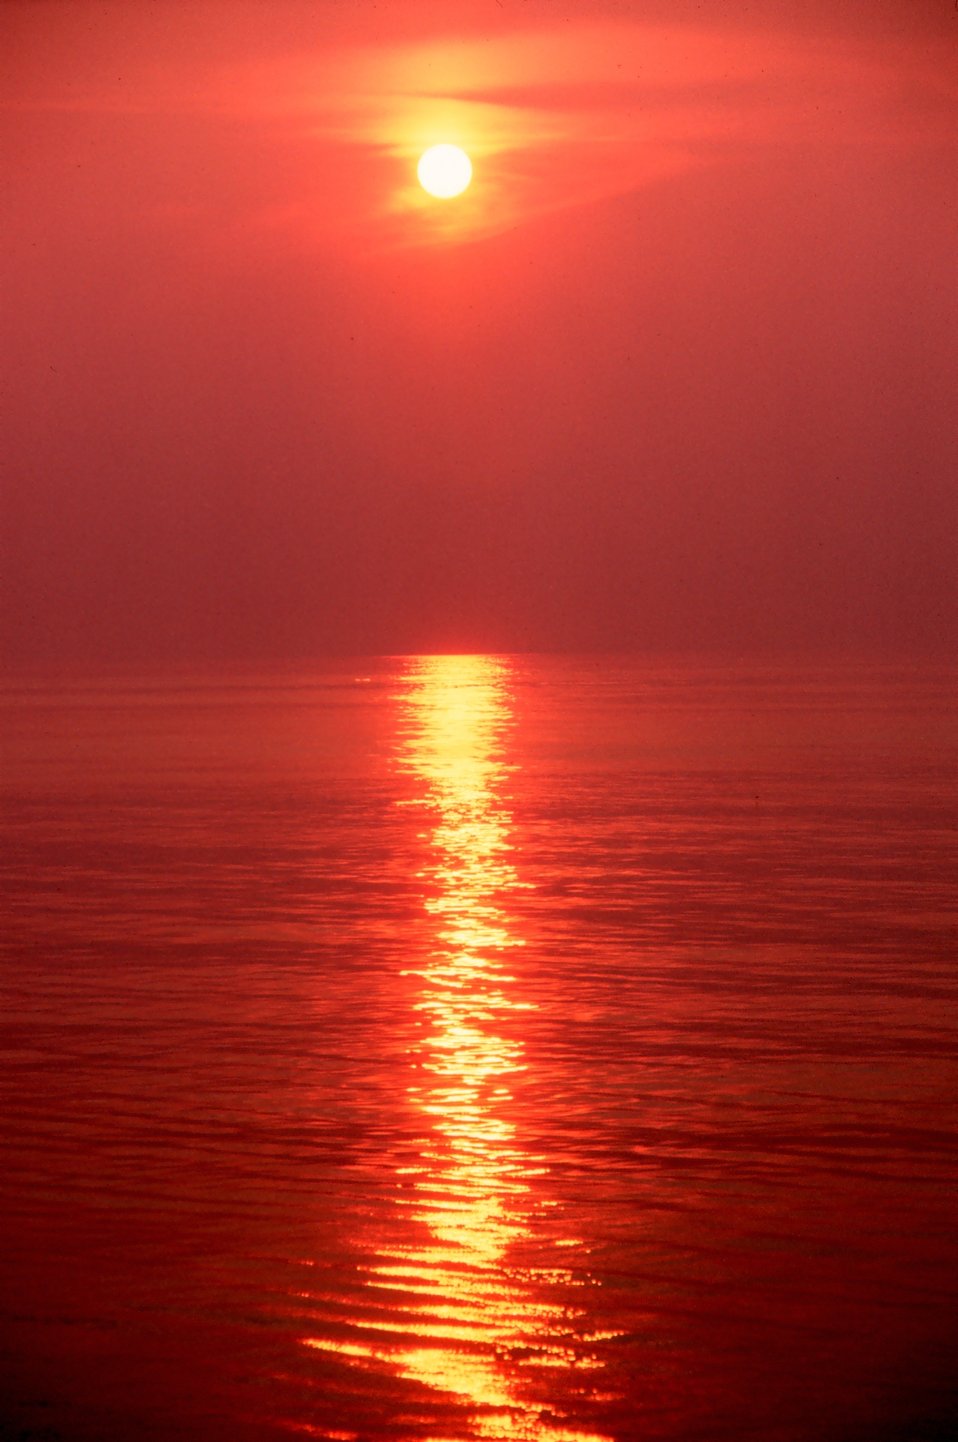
Orange sky and orange sea with a pillar of light reflecting off the ocean.